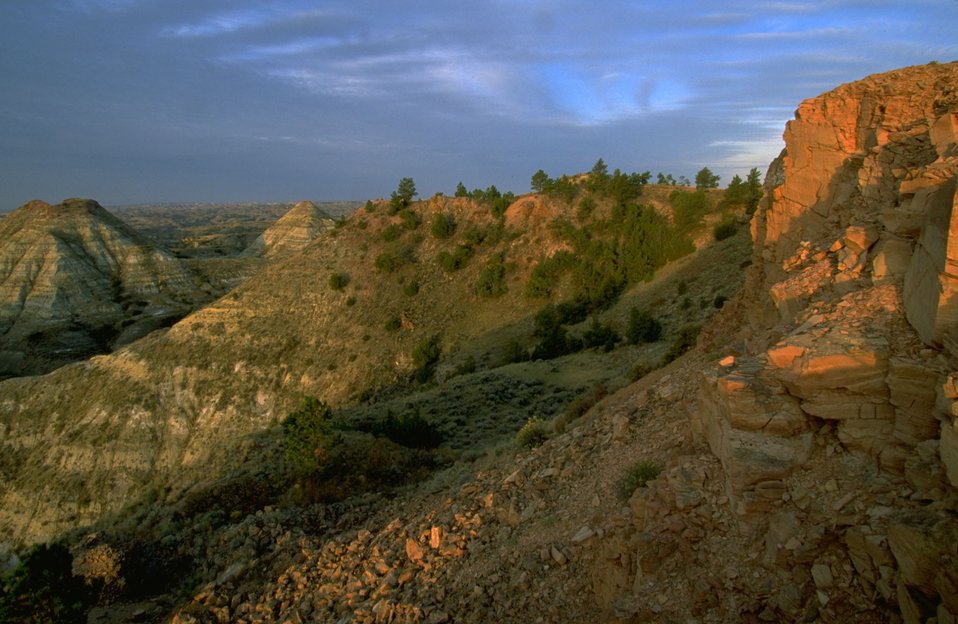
Terry Badlands Wilderness Study Area